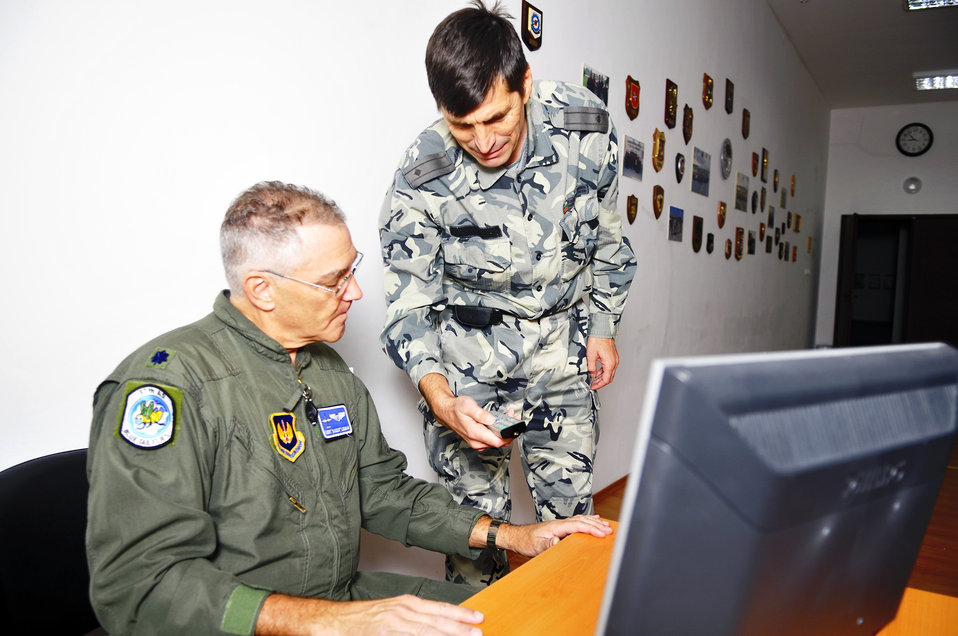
Fall Thracian 2010

Lt. Col. Robert Lehman receives help logging onto a computer from Bulgarian air force Maj. Ilai Hristozov prior to a round-table discussion on the history and future of flight medicine during Exercise Thracian Fall 2010 Oct. 19, 2010, at Graf Ignatievo Air Base, Bulgaria. Colonel Lehman is a fight surgeon from the 86th Medical Group at Ramstein Air Base, Germany.